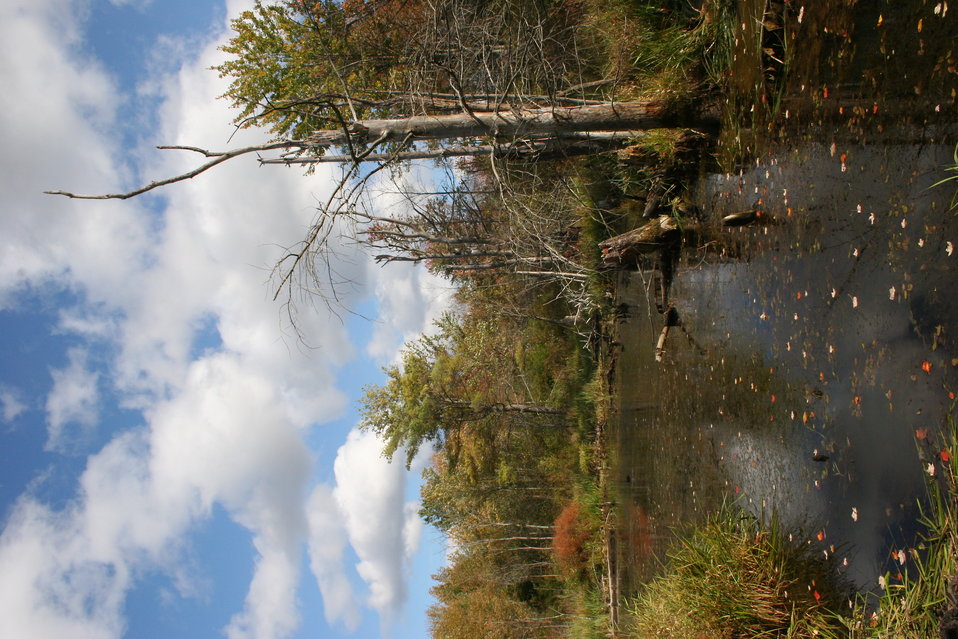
Fall scene at Great Bay NWR in Newington, New Hampshire.